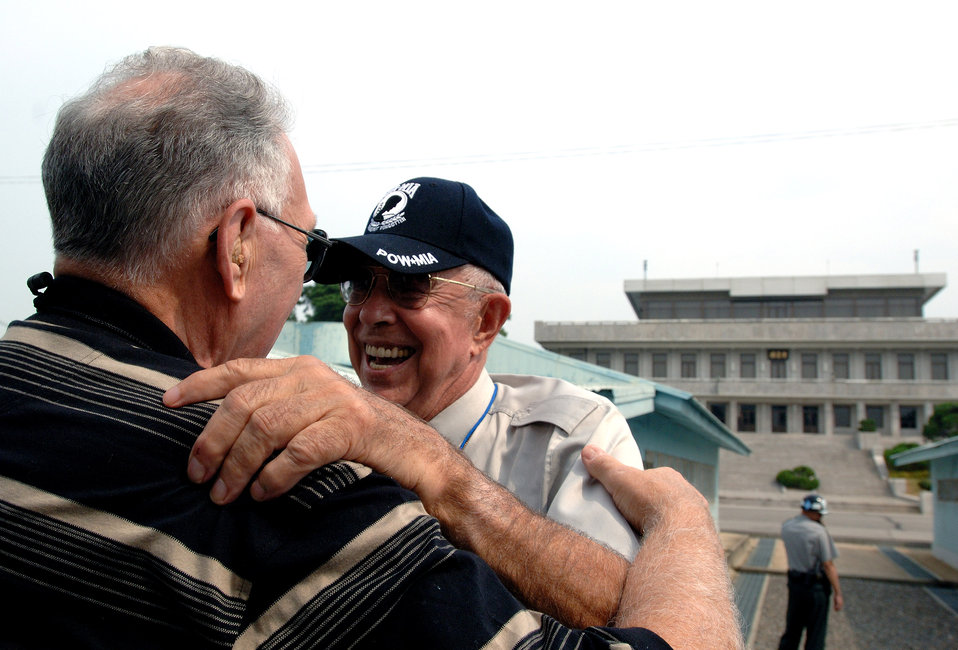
Korean War veterans leading different lives reunite

Donald Krueger (left) hugs retired Lt. Col. Harold Fischer after meeting by chance during a visit to the Korean Demilitarized Zone during a Sept. 13 tour held to honor Korean War veterans in Panmunjeom, South Korea. Colonel Fischer is a double ace fighter pilot from the war. Mr. Krueger was an enlisted munitions specialist during the Korean War. The two had not seen each other in 55 years. Air Force Korean War veterans were visiting South Korea during a weeklong tour in observance of the Air Force's 60th Anniversary.